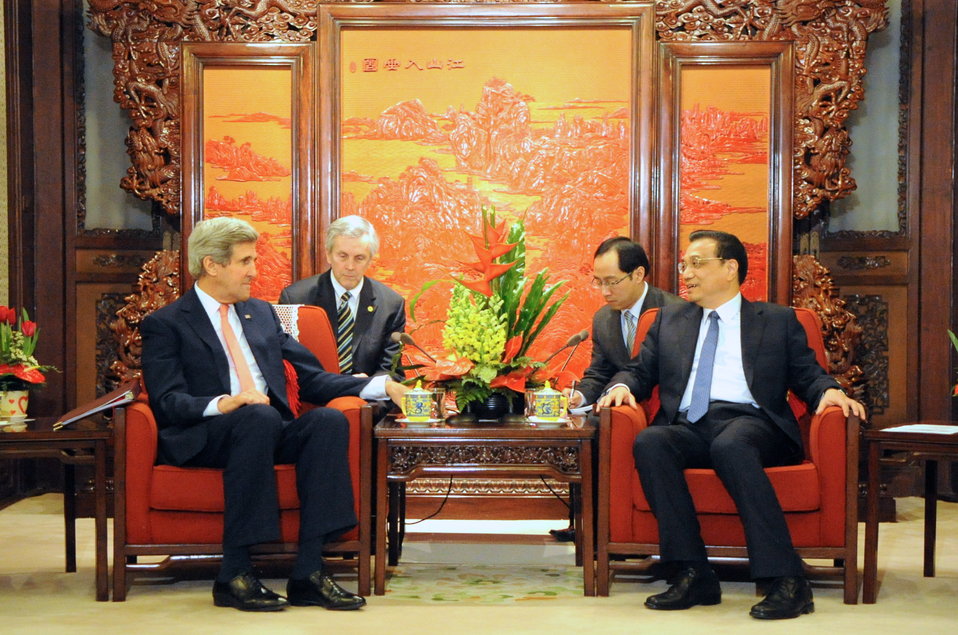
Chinese Premiere Li Greets Secretary Kerry in Beijing

Chinese Premiere Li Keqiang greets U.S. Secretary of State John Kerry at a meeting at the Ziguangge Purple Chamber at the Zhongnanhai Leadership Compound in Beijing, China on February 14, 2014.